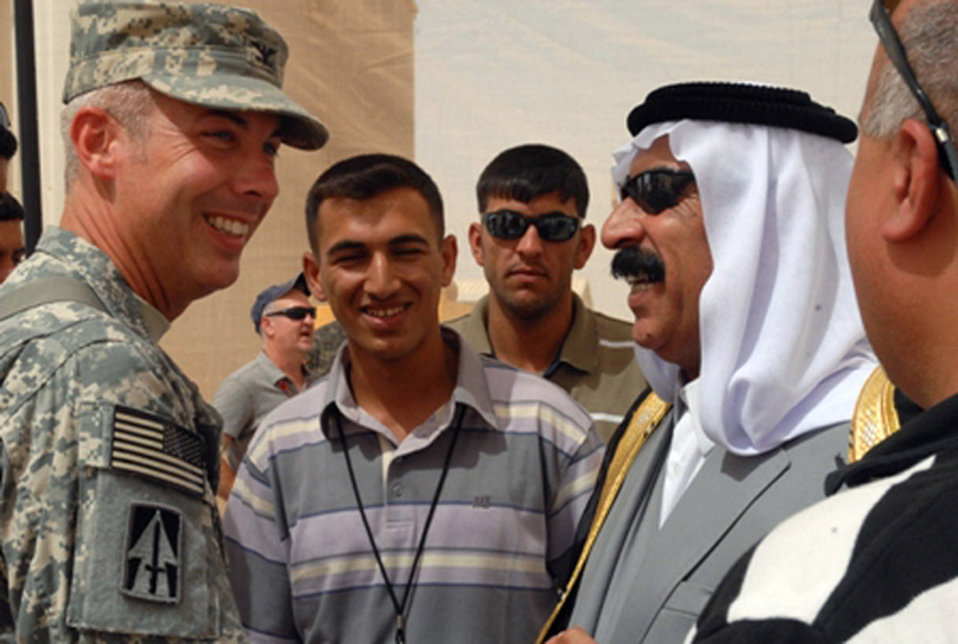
Recycling contract turns trash into treasure

Army Col. Kenneth Newlin greets local leader Sheikh Saad Hasan Altememy July 11 during a ribbon-cutting ceremony for an Iraqi-run recycling center at Joint Base Balad, Iraq. The 76th Infantry Brigade Combat Team, along with many sheikhs from the surrounding Balad area, are working together through the Iraqi-Based Industrial Zone program. The initiative compliments Multi-National Forces-Iraq's mission by providing safe, secure jobs for local Iraqis and by giving them additional contracting opportunities normally reserved for larger, foreign corporations. Colonel Newlin is the 76th Infantry BCT's deputy commander.